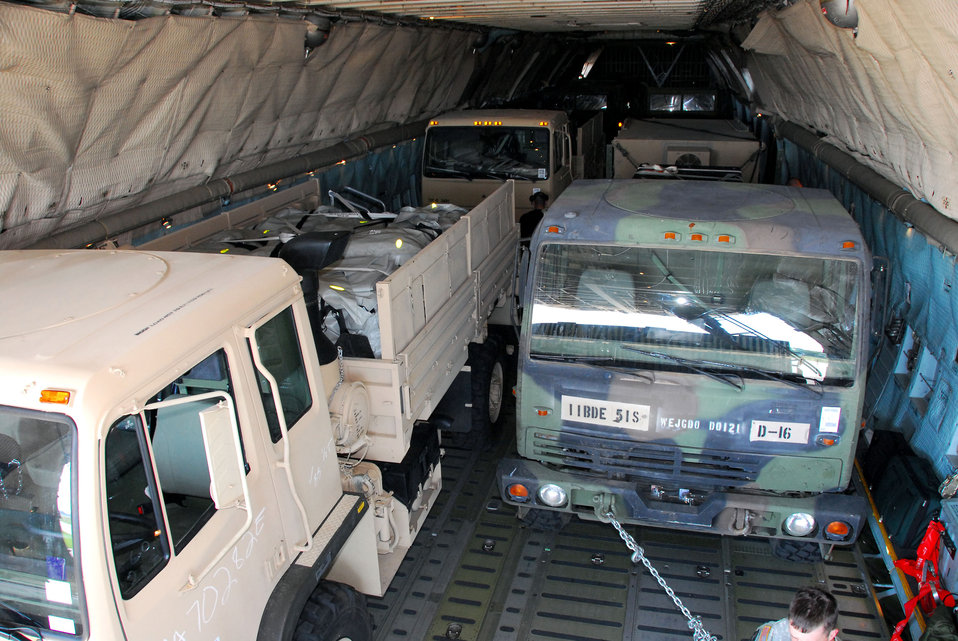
C-5 equals max capacity

A C-5 Galaxy is loaded up with six Army vehicles at Hulman Field, Terre Haute, Ind., in support of Exercise Ardent Sentry on May 12, 2007. Ardent Sentry is designed to hone coordination between the Department of Defense as well as federal, state, local and private agencies in a series of challenging scenarios ranging from natural disasters to terrorist incidents.